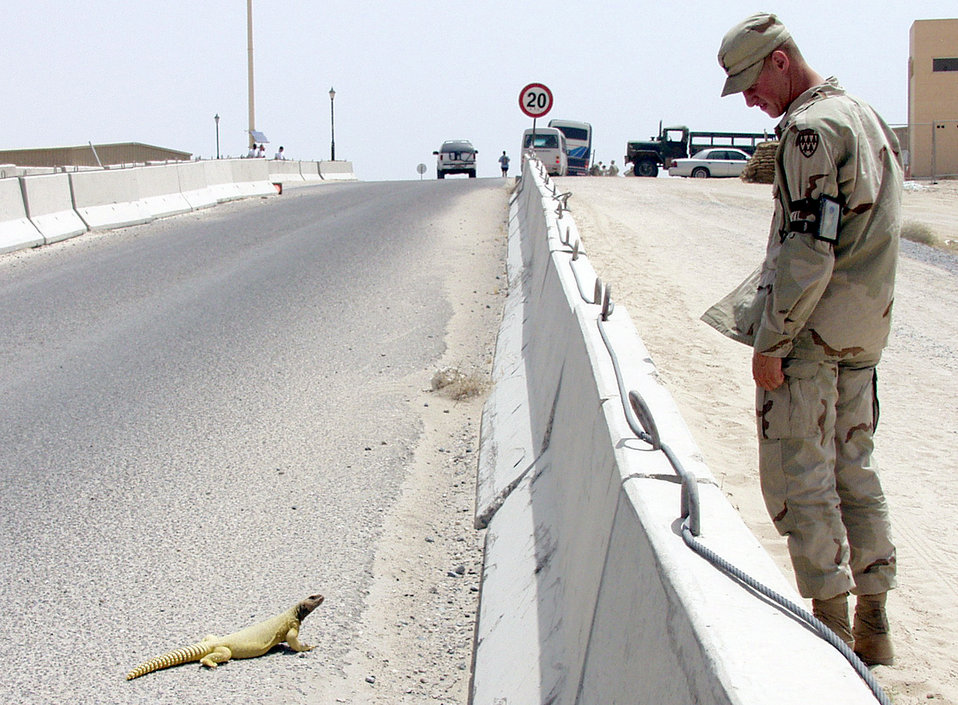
Why did the dhub cross the road?

OPERATION IRAQI FREEDOM (AFPN) -- A soldier walking to the 386th Expeditionary Services Squadron's dining facility stops to check out a